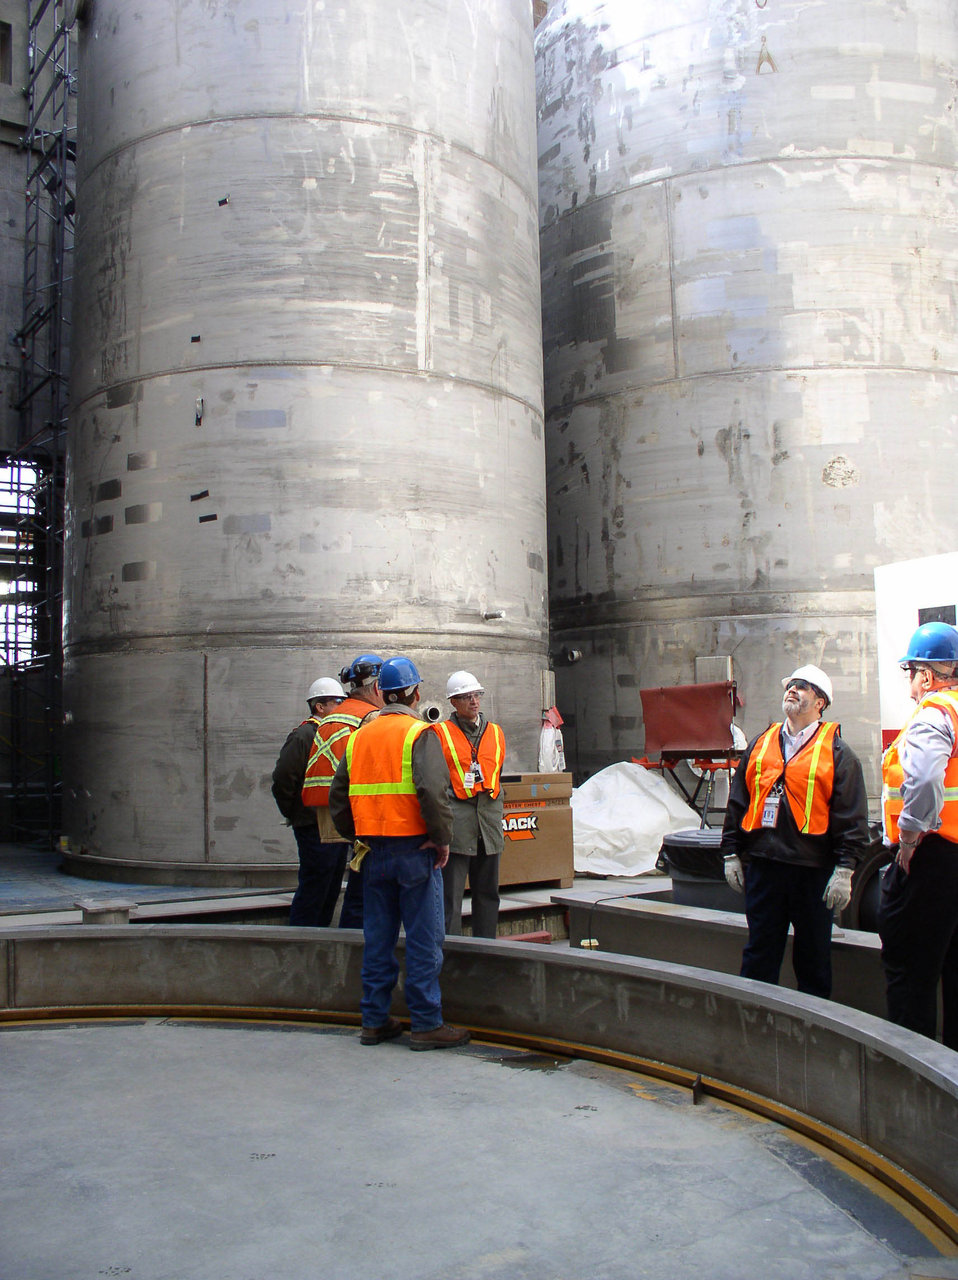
RISPOLI TOUR AT VIT PLANT 2008